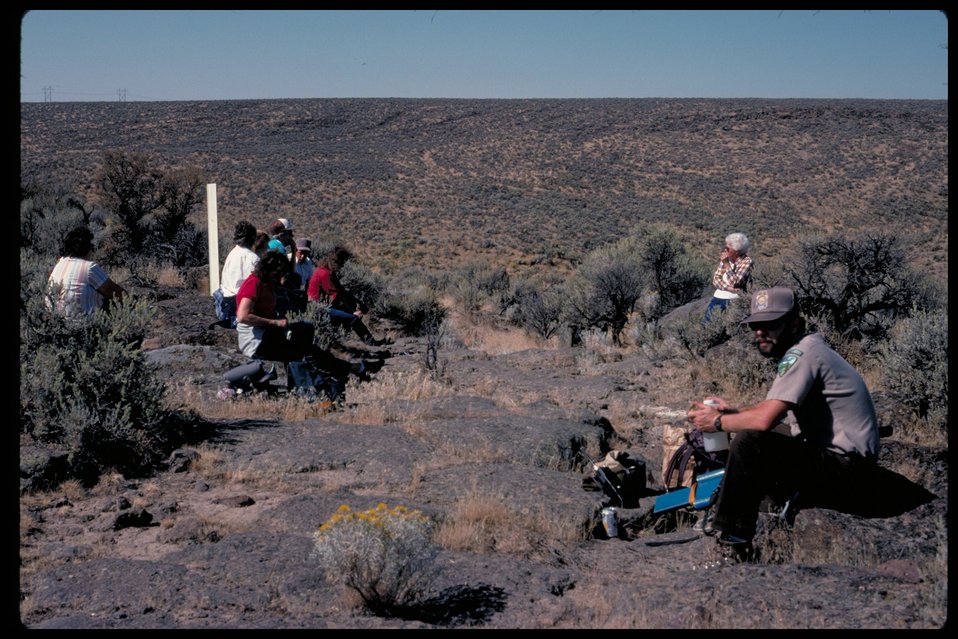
Oregon Trail near Alkali Creek Lower Snake River District